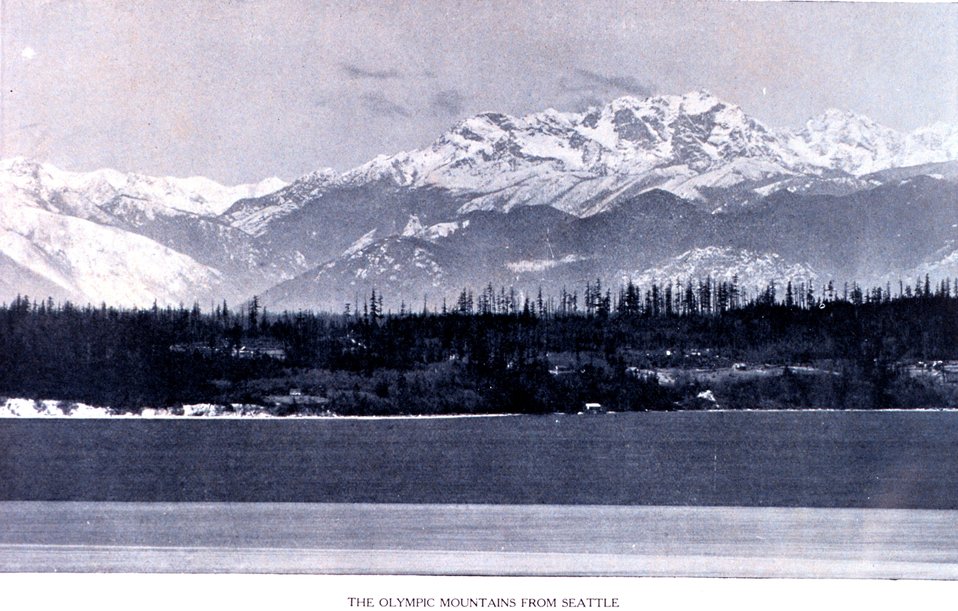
'The Olympic Mountains from Seattle'. In: 'Puget Sound and Western Washington Cities-Towns Scenery', by Robert A. Reid, Robert A. Reid Publisher, Seattle, 1912. P. 10.